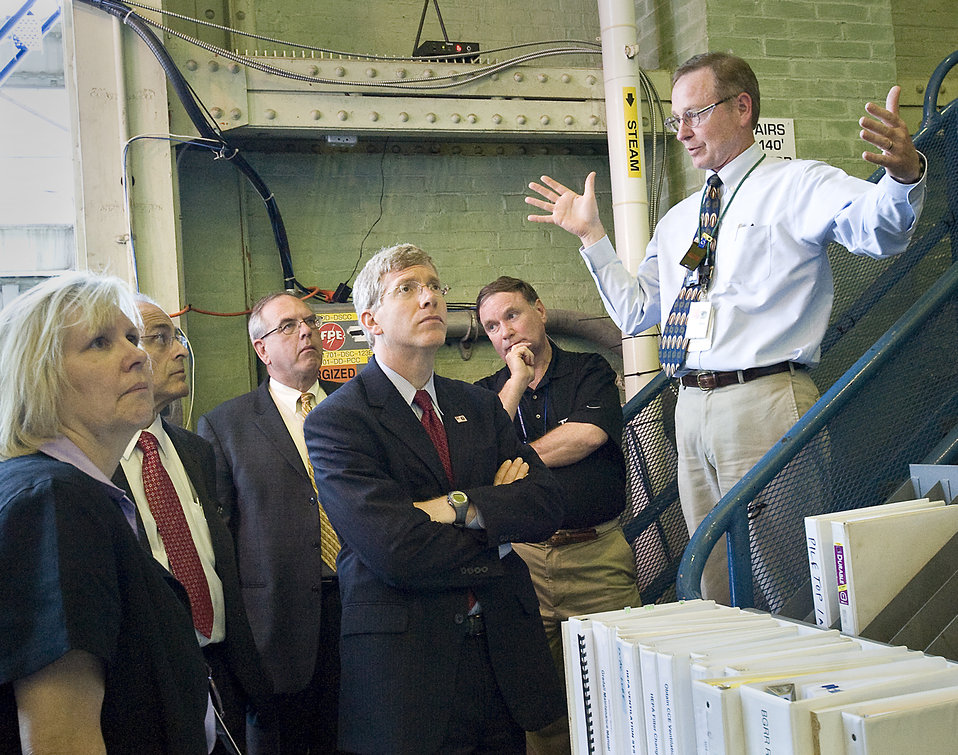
Brookhaven reactor visit tour

John Sattler (DOE) and Chuck Armitage (BSA) conducting a tour for Deputy Secretary Poneman and others.